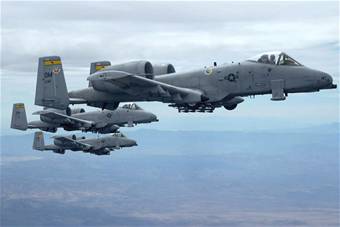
Inspections ordered for A-10 Thunderbolt IIs

Three A-10 Thunderbolt IIs fly in formation. A-10s provided close-air-support near Balad, Iraq. Air Force officials have called for an immediate inspection and repair of wing cracks for a portion of the A-10 Thunderbolt II fleet.